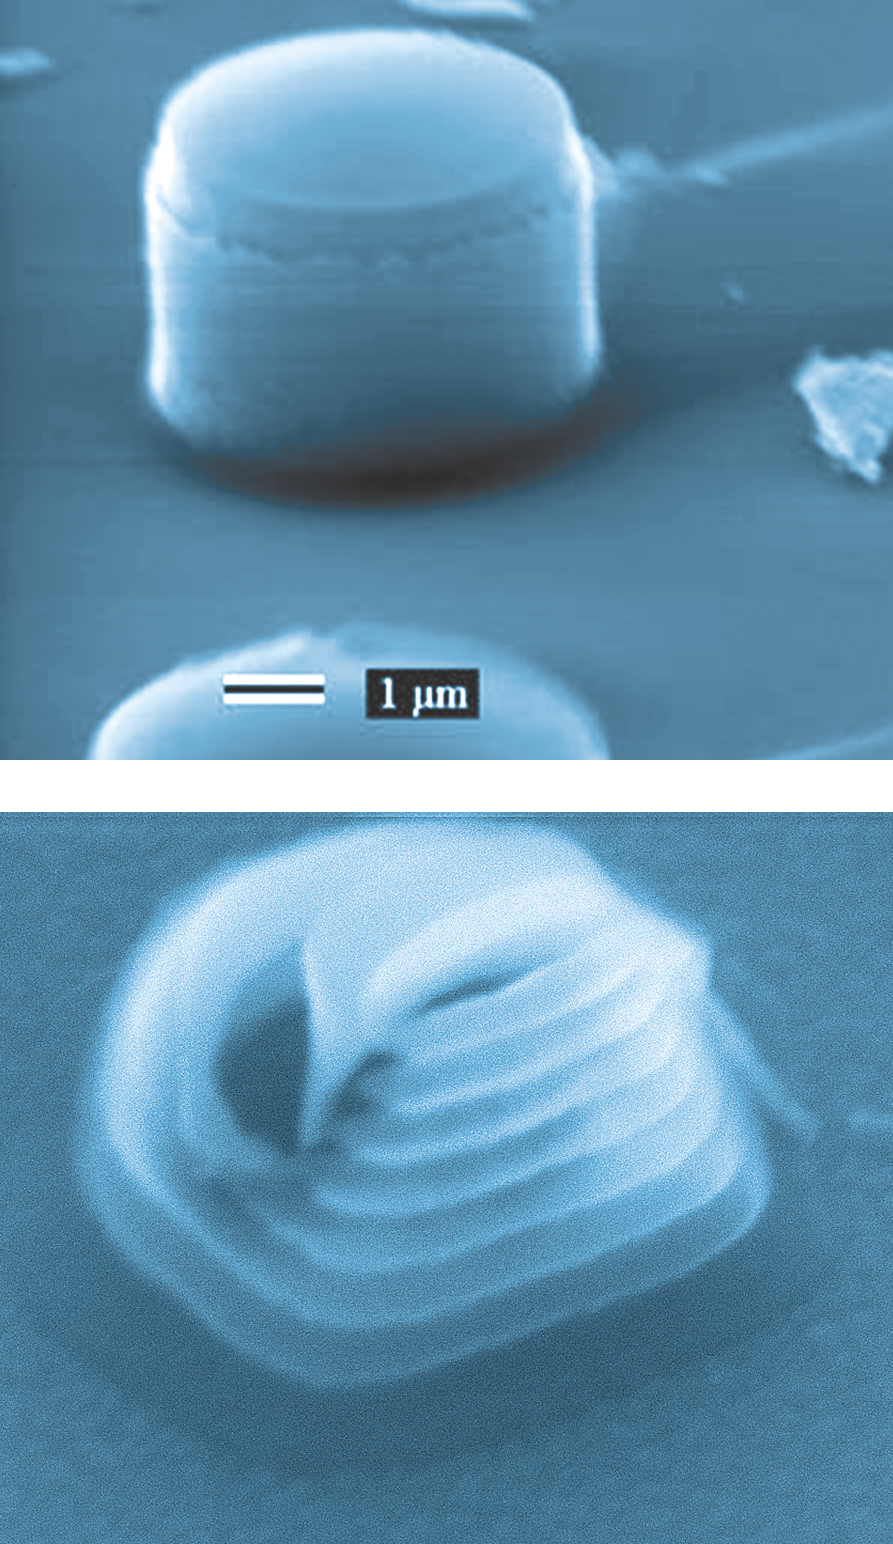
Nanotechnology; Quantum Dots

Well-made quantum dots (top) are a source of single
photons for use in quantum communications
and other fields.